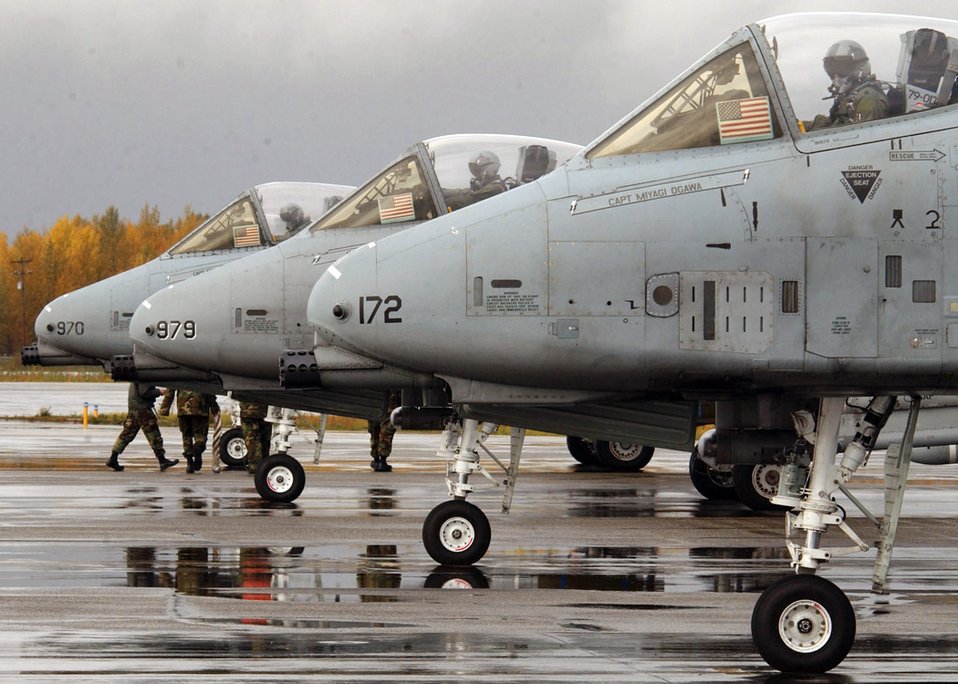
EIELSON AIR FORCE BASE, Alaska -- Three A-10 Thunderbolt IIs with the 355th Fighter Squadron prepare to taxi prior to takeoff for a training mission here Sept. 8. The squadron's primary mission includes air-strike control, close-air support, target interdiction, joint-air attack, combat escort and combat search and rescue.